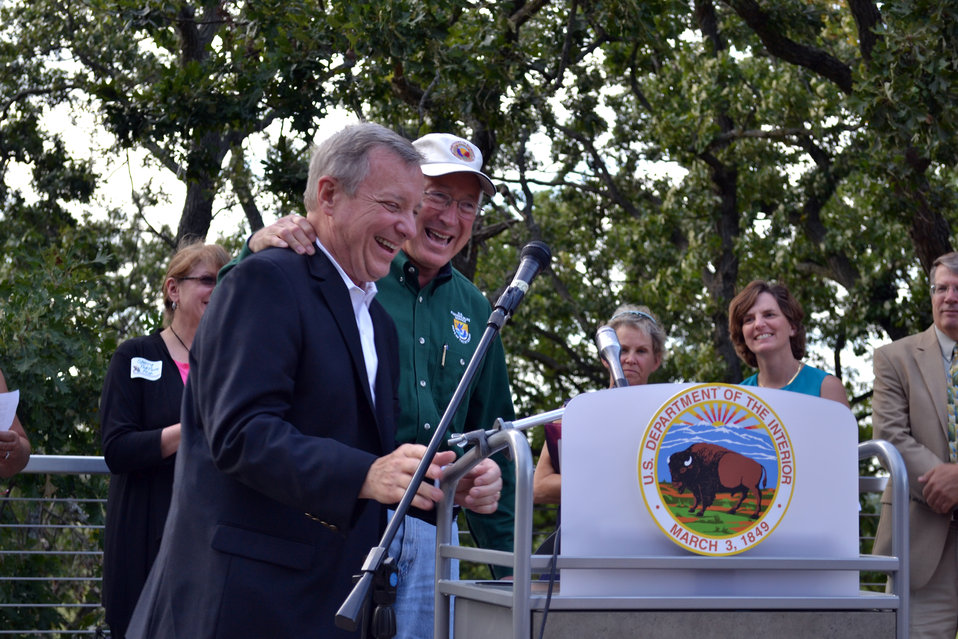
Friends and Colleagues

Senator Dick Durbin was proud to join his long-time colleague, Secretary Salazar in celebrating the announcement of Hackmatack National Wildlife Refuge.